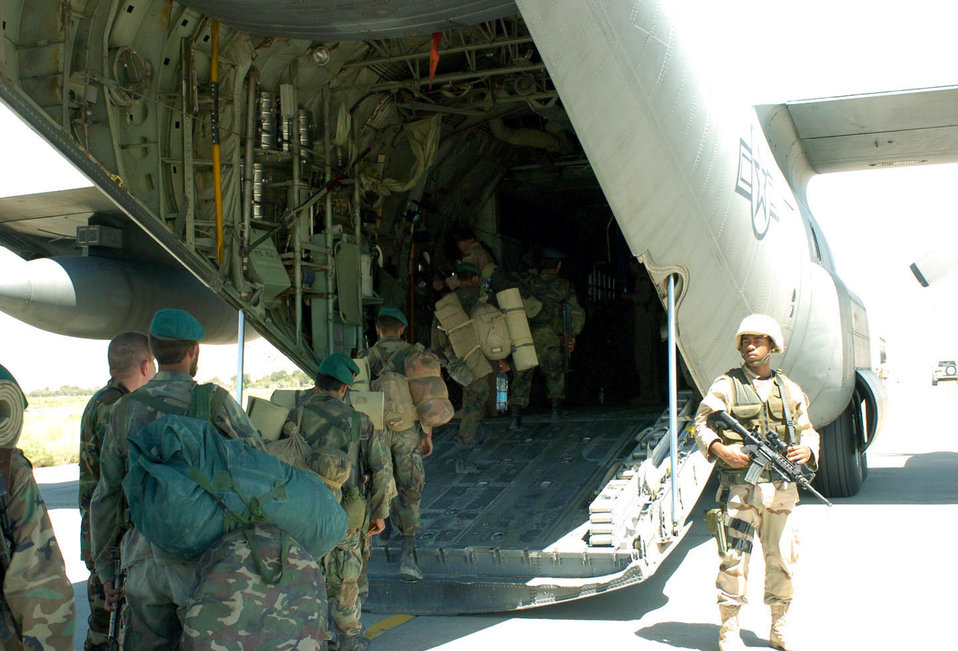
Afghan support

KABUL, Afghanistan -- Airman 1st Class Dontrell Lively provides security at Kabul International Airport here Aug. 15 as Afghan soldiers board a C-130 Hercules bound for Shindand National Airport. The U.S. Air Force is helping airlift several Afghan battalions to Shindand to retake control of government property seized as a result of factional fighting in the area.